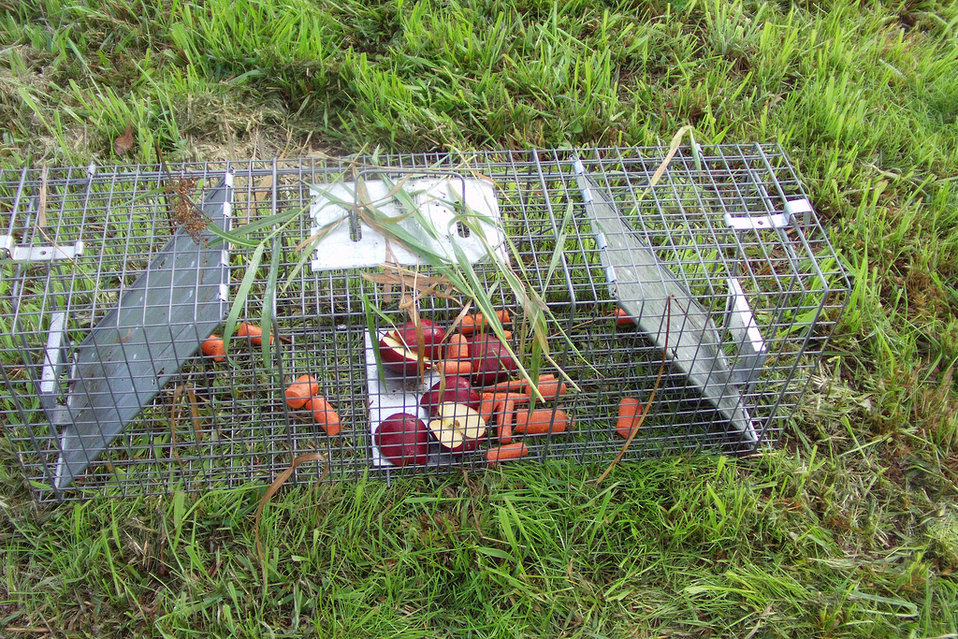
A Baited Trap for Capturing Nutria

A trap baited with carrots and apples awaits a nutria to venture out of the water and investigate. The animals are trapped in order to tag them to better understand the habits of nutria and preventing their spreading.